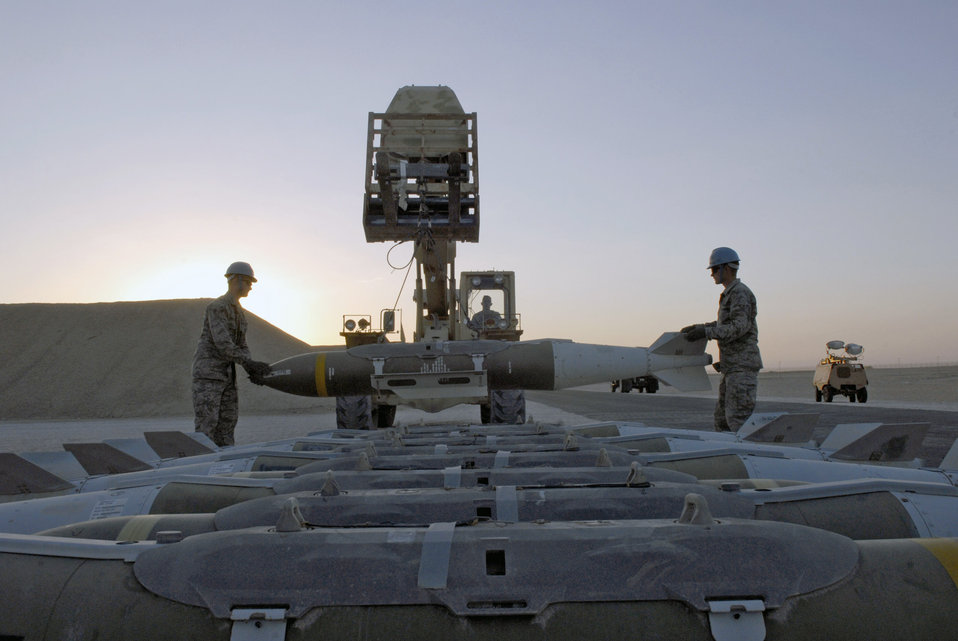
Heavy metal

Airman 1st Class Brian Foster (from left to right), Senior Airman Brandon Mullennix and Airman Bryan Newcomer move guided bomb unit-31s during an annual munitions serviceability inspection Feb. 3 at an air base in Southwest Asia. Airmen Foster and Bullennix are 379th Expeditionary Maintenance Squadron ammunitions systems journeymen. All are deployed from Dyess Air Force Base, Texas. Airman Mullennix is from Angleton, Texas. Airman Foster is from Ellijay, Ga., Airman Newcomer is a 379th EMXS ammunitions systems apprentice and hails from Suwanee, Ga.